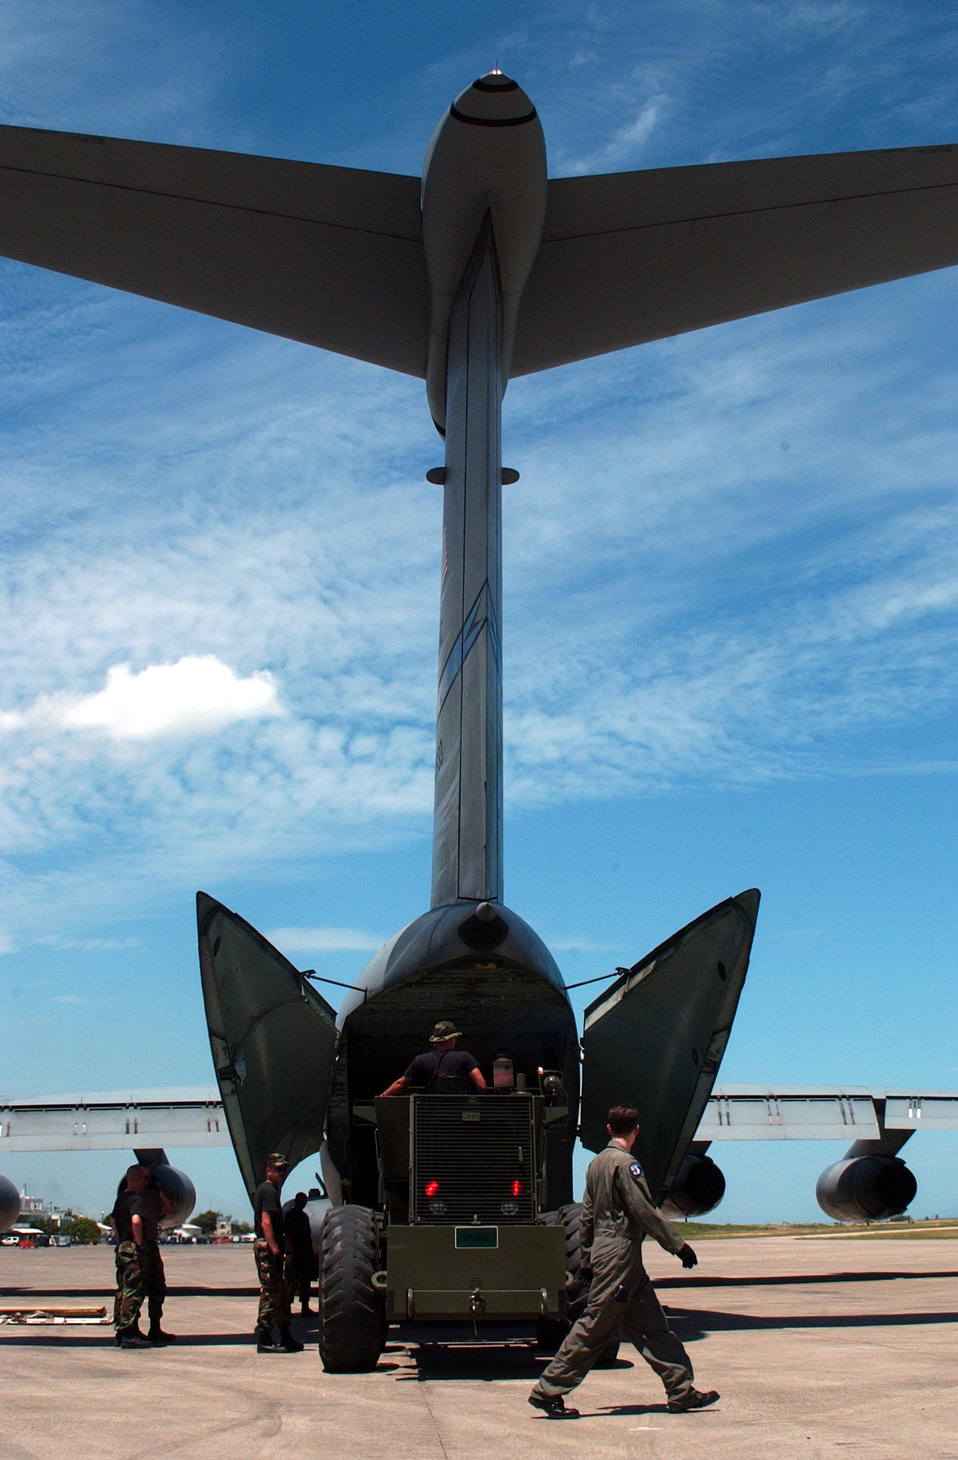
Operation Secure Tomorrow

PORT-AU-PRINCE, Haiti -- Under a Caribbean sky, 84th Aerial Port Squadron Airmen work with a C-141 Starlifter crew to load and unload cargo here while supporting Operation Secure Tomorrow.